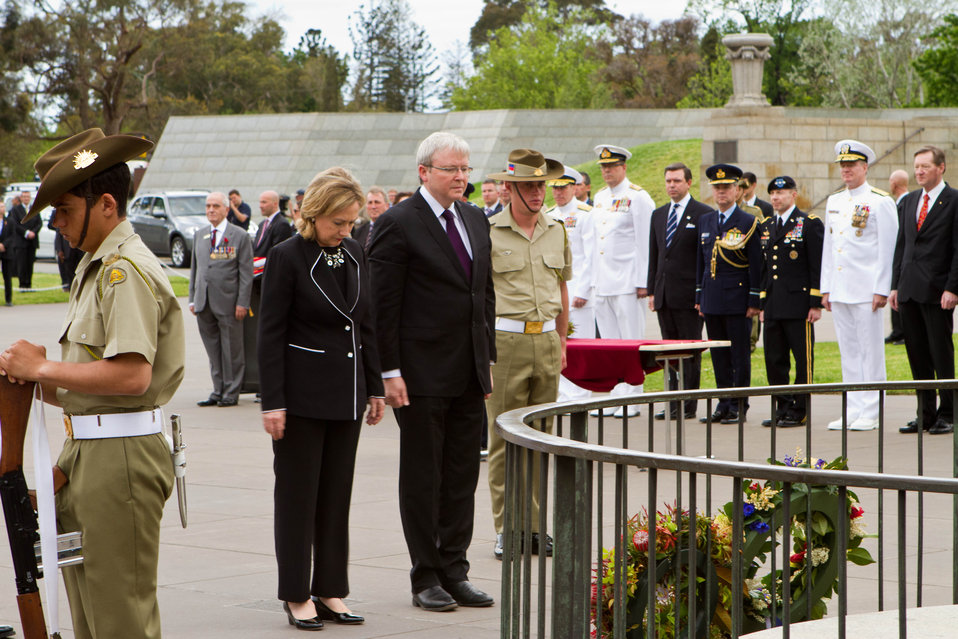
Secretary Clinton and Australian Foreign Minister Rudd Take Part in a Wreath Laying Ceremony

U.S. Secretary of State Hillary Rodham Clinton and Australian Foreign Minister Kevin Rudd take part in a wreath laying ceremony at the Shrine of Remembrance in Melbourne, Australia, on November 8, 2010.